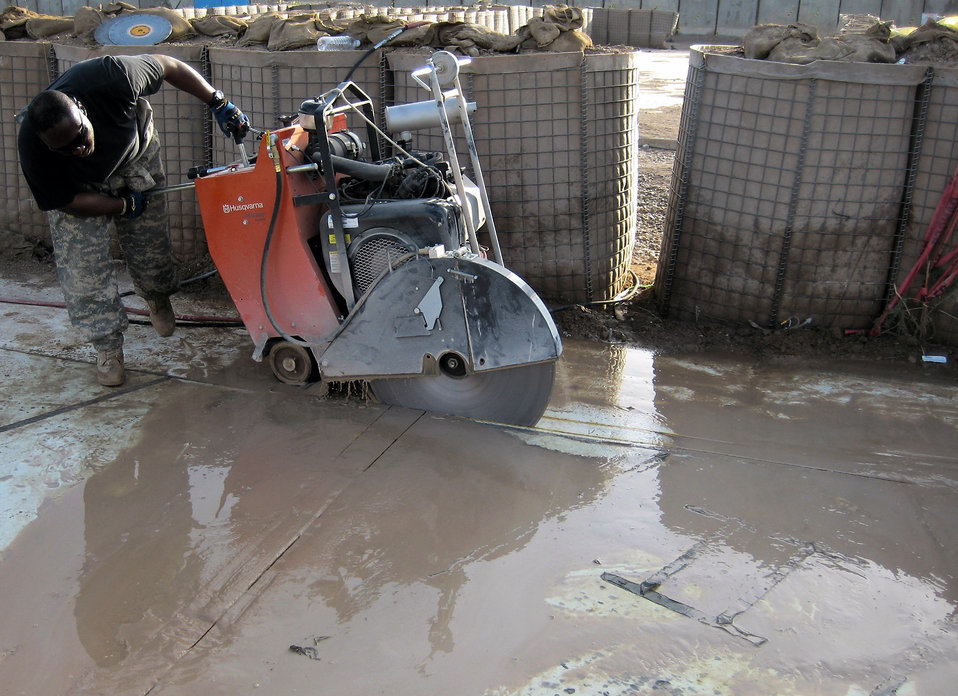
Temporary hospital finds permanent place in history

Tech. Sgt. Freddie Kirkwood begins sawing the edges of Bay II from the old Air Force Theater Hospital site Feb. 29 at Balad Air Base, Iraq. The engineers were able to successfully remove the section of concrete without any damage, maintaining the historical significance. The piece was then sent to the National Museum of Health and Science in Washington for an exhibit. Sergeant Kirkwood is a 332nd Expeditionary Civil Engineer Squadron heavy repair operator and technician deployed from Yokota Air Base, Japan.